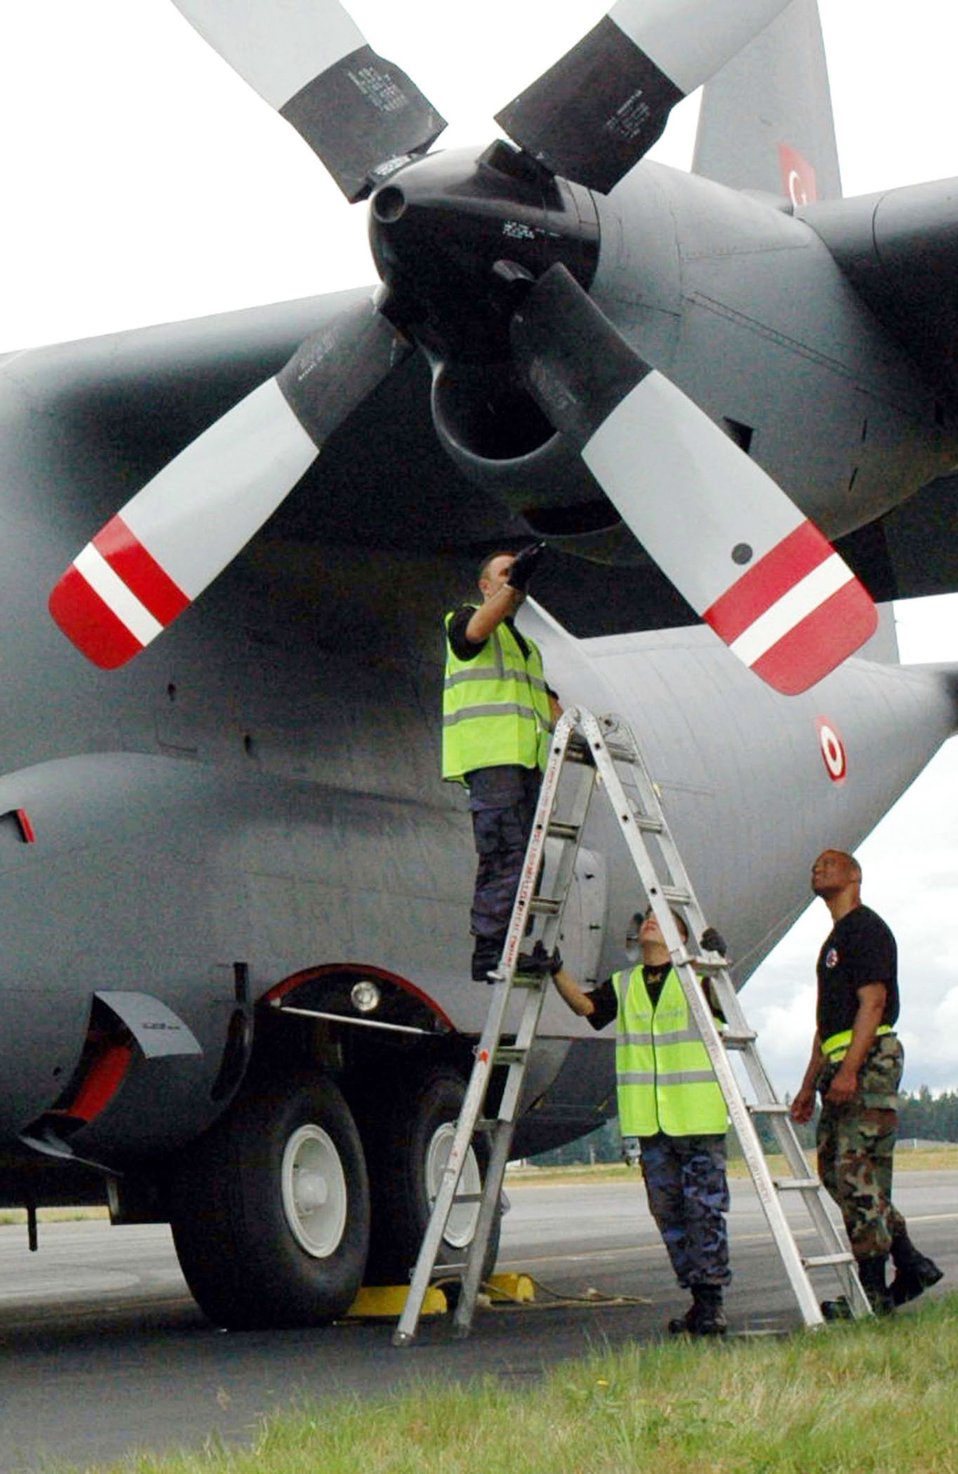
Air Mobility Command's Rodeo 2007

Tech. Sgt. Trey Woodward (right) and two Turkish maintainers make a final check of an engine on a Turkish C-130 that required repair. The Turks, with assistance from Sergeant Woodward and other Airmen from the 446th Aircraft Maintenance Squadron at McChord Air Force Base, Wash., worked non-stop to repair the engine and get the aircraft ready for its first competition flight at Air Mobility Command's Rodeo 2007.